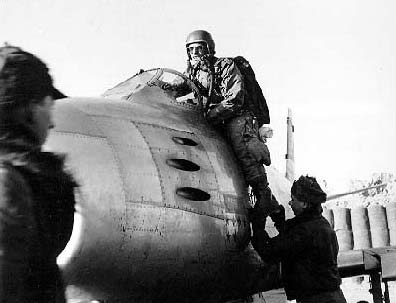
Lieutenant Colonel James Jabara

1950's -- Lieutenant Colonel James Jabara exits the cockpit after a mission. James Jabara, the world's first jet ace, was born in Muskogee, Okla., October 1923. Jabara was the prototypical fighter pilot, although perhaps not at first glance. Standing 5 feet 5 inches tall, Jabara was nevertheless larger than life. He was determined to enter pilot training, and he did. He was equally determined to become an ace in his F-86 Sabre, and he did.